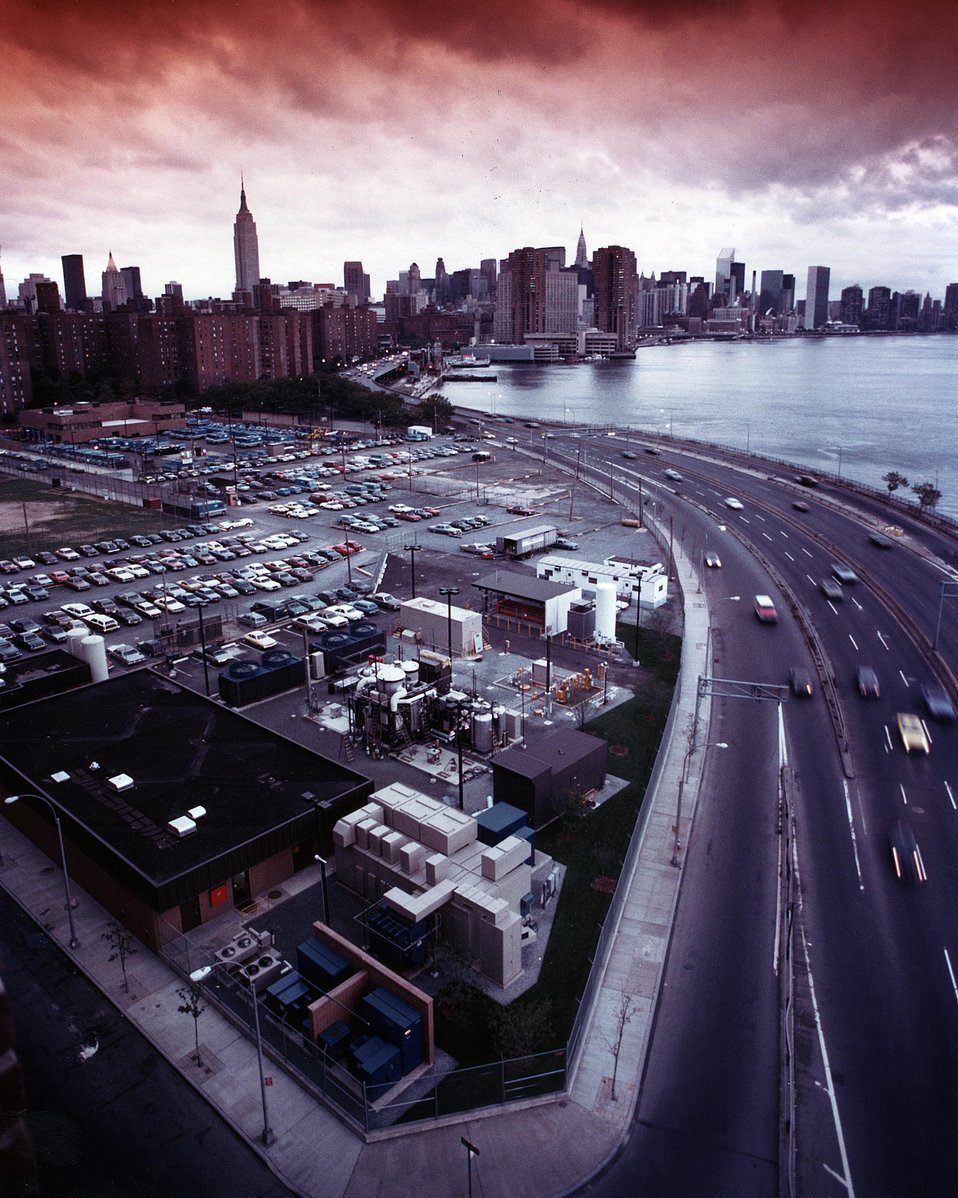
VIEW OF THE 4.8-MW FUEL CELL POWER PLANT.

THE 4.8-MW FUEL CELL POWER PLANT CONTAINS A FUEL PROCESSOR FOR ENRICHING HYDROCARBON FUEL WITH HYDROGEN, A FUEL CELL POWER SECTION IN WHICH THE PROCESSED FUEL AND AIR REACT TO GENERATE DC POWER, AND AN INVERTER IN WHICH THE DC IS CHANGED TO AC. THIS TYPE OF POWER PLANT IS ESPECIALLY SUITED TO URBAN AND OTHER DENSELY POPULATED AREAS BECAUSE IT IS A MODULAR SYSTEM WHICH IS EASY TO TRANSPORT BY TRUCK AND ASSEMBLE IN A SMALL AREA. OTHER ADVANTAGES ARE ITS ALMOST NOISELESS OPERATION, LACK OF POLLUTION, AND ABILITY TO OPERATE WITHOUT LARGE QUANTITIES OF WATER. THE 4.8-MW FUEL CELL POWER PLANT IS BEING INSTALLED IN NEW YORK CITY AND WILL EVENTUALLY BE INTEGRATED INTO THE CONSOLIDATED EDISON UTILITY NETWORK.